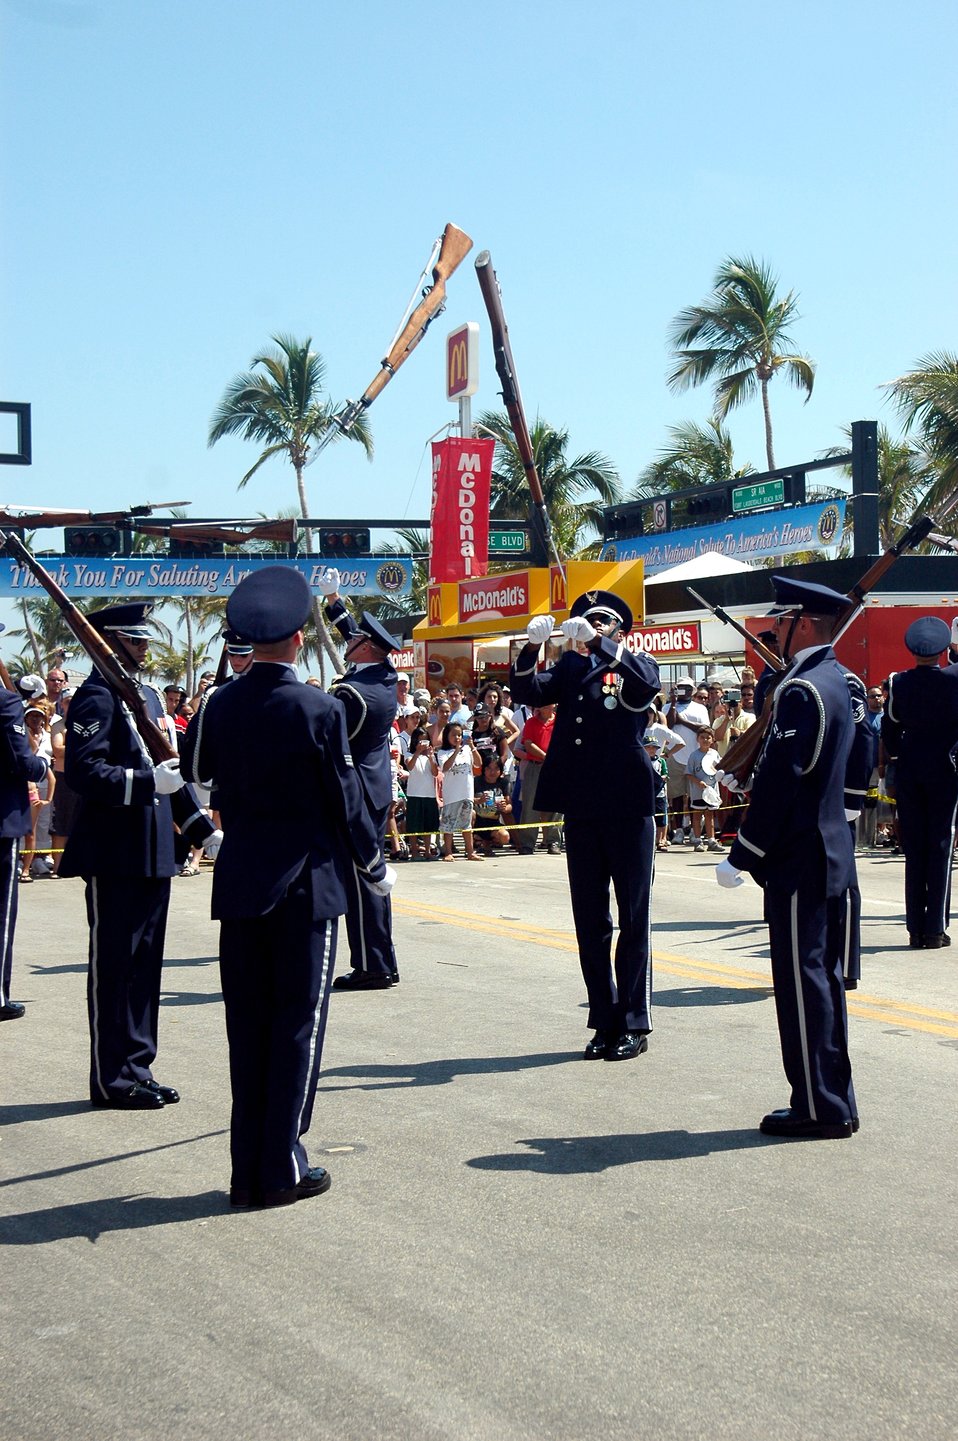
Air Force Honor Guard performs at 2006 Air and Sea Show

U.S. Air Force Honor Guard Drill Team members perform for the crowd during the 2006 Air and Sea Show in Fort Lauderdale, Fla., May 4 to 7.